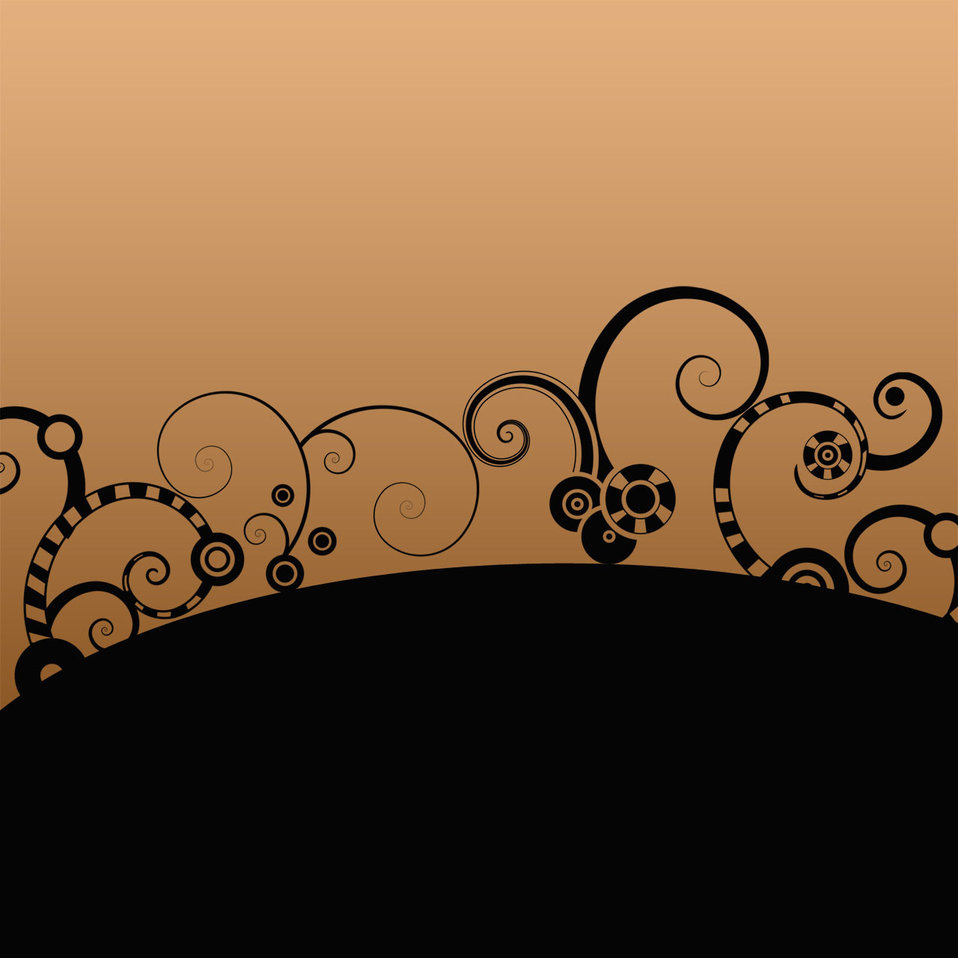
Alice's adventure

Nice swirls on soothing background.